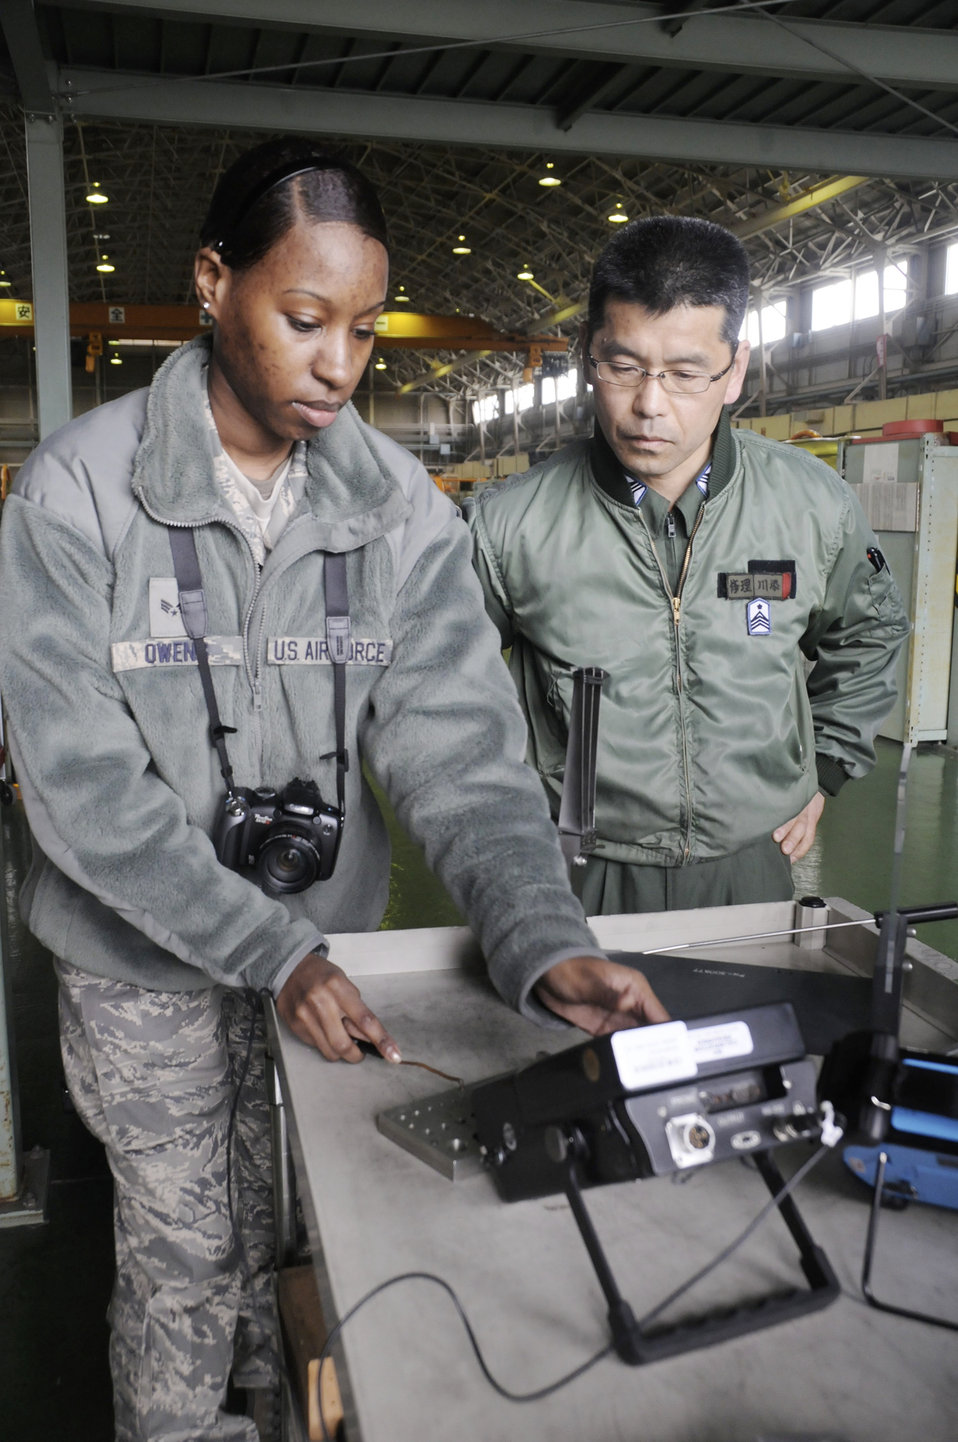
ATR exercise

Senior Airman Danielle Owens compares the equipment she uses to check for engine cracks to the equipment of Japan Air Self Defense Force Master Chief Sgt. Kawasoe during an aviation training relocation exercise March 8, 2010, Tsuiki Air Base, Japan. Airman Danielle is a 35th Maintenance Squadron non-destructive inspections specialist.